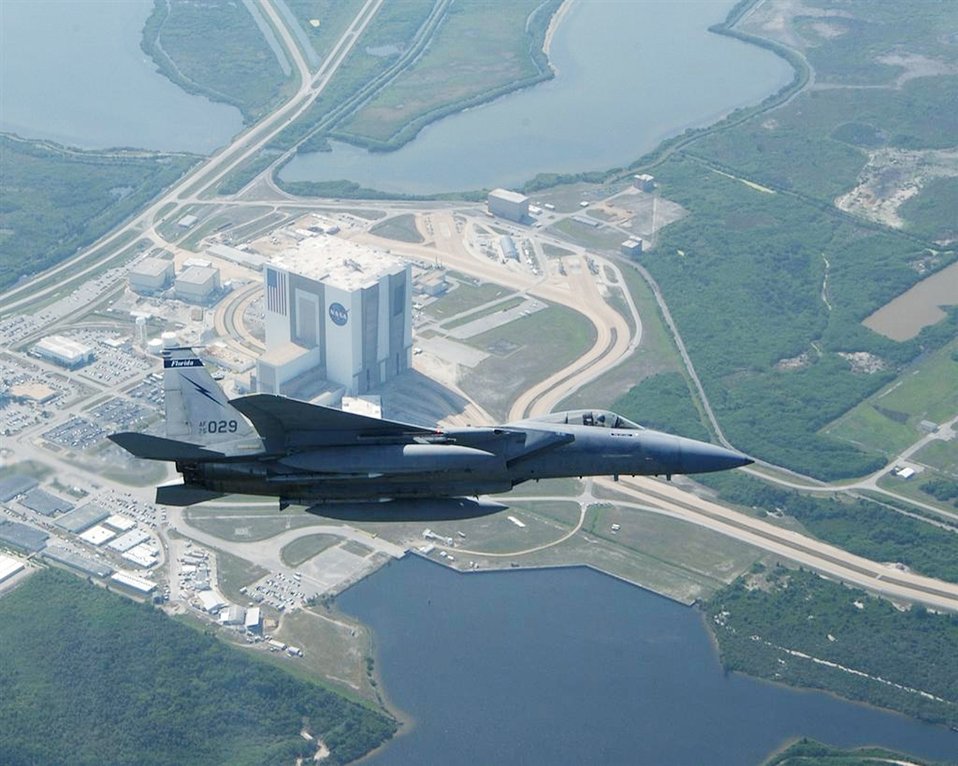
Backbone of homeland defense

An F-15 Eagle flies over NASA's Cape Canaveral in Florida. The U.S. military routinely provides support to NASA shuttle launches, ensuring airspace safety and security for the launch, and landing by enforcing the FAA's temporary flight restriction zones.